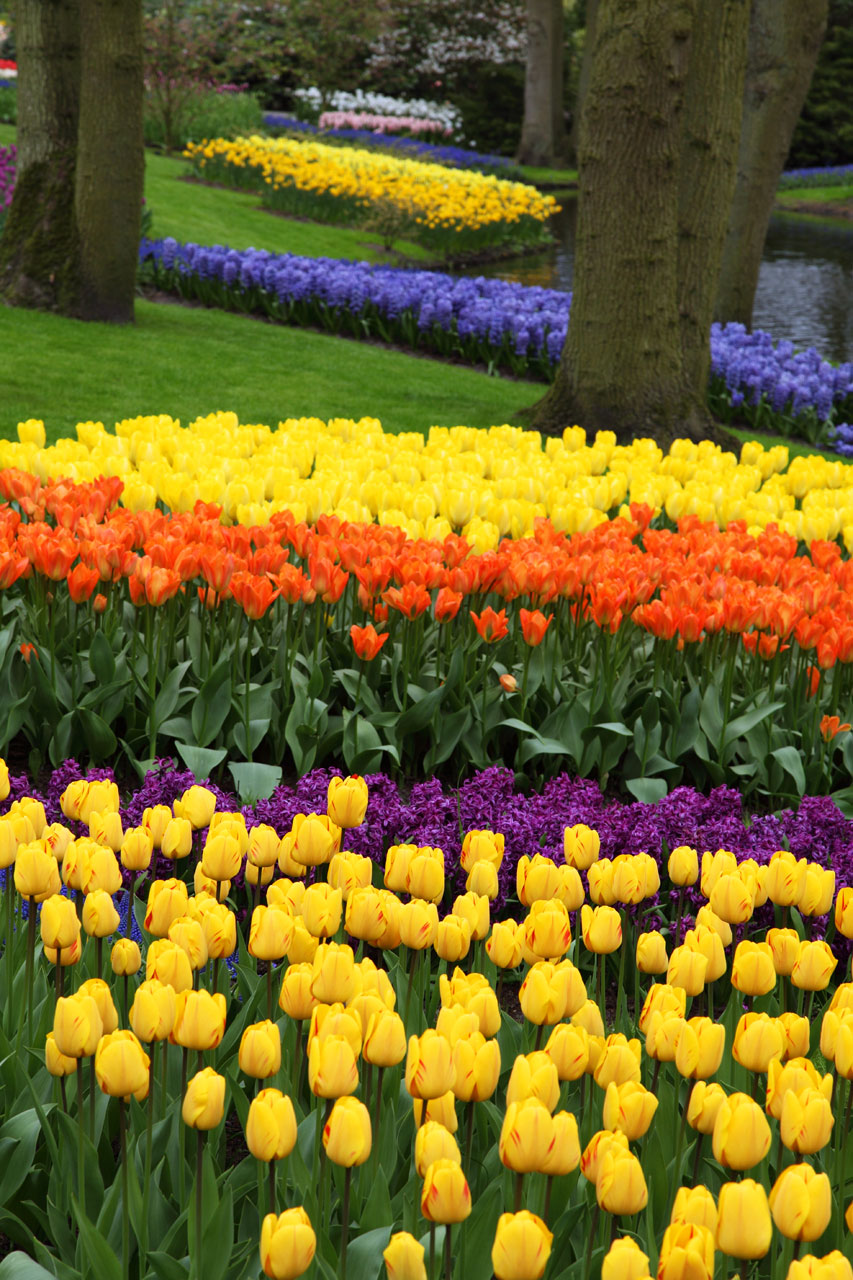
Tulips and hyacinths in keukenhof gardens.